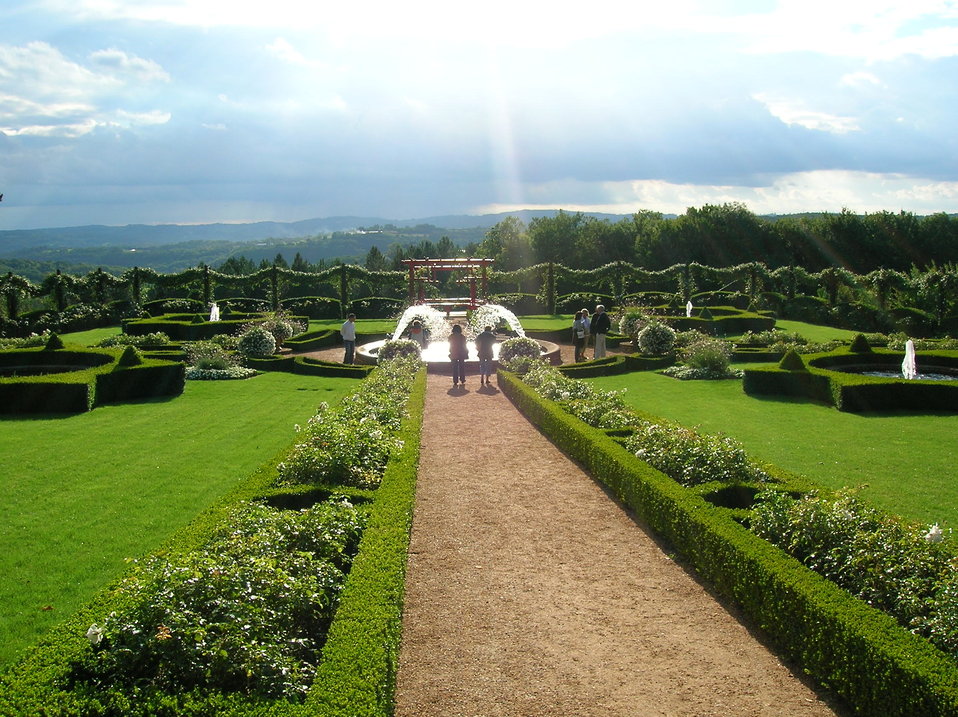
Gardens of Eyrignac Manor, in Dordogne (France). Fran√ßais†: Jardins du Manoir d'Eyrignac, en Dordogne (France).